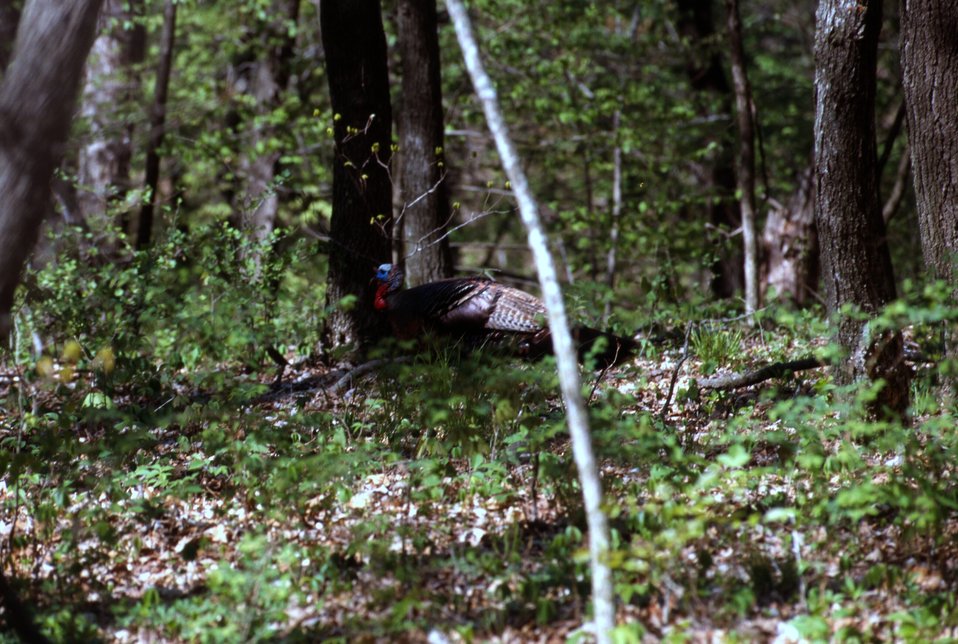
Spring Turkey